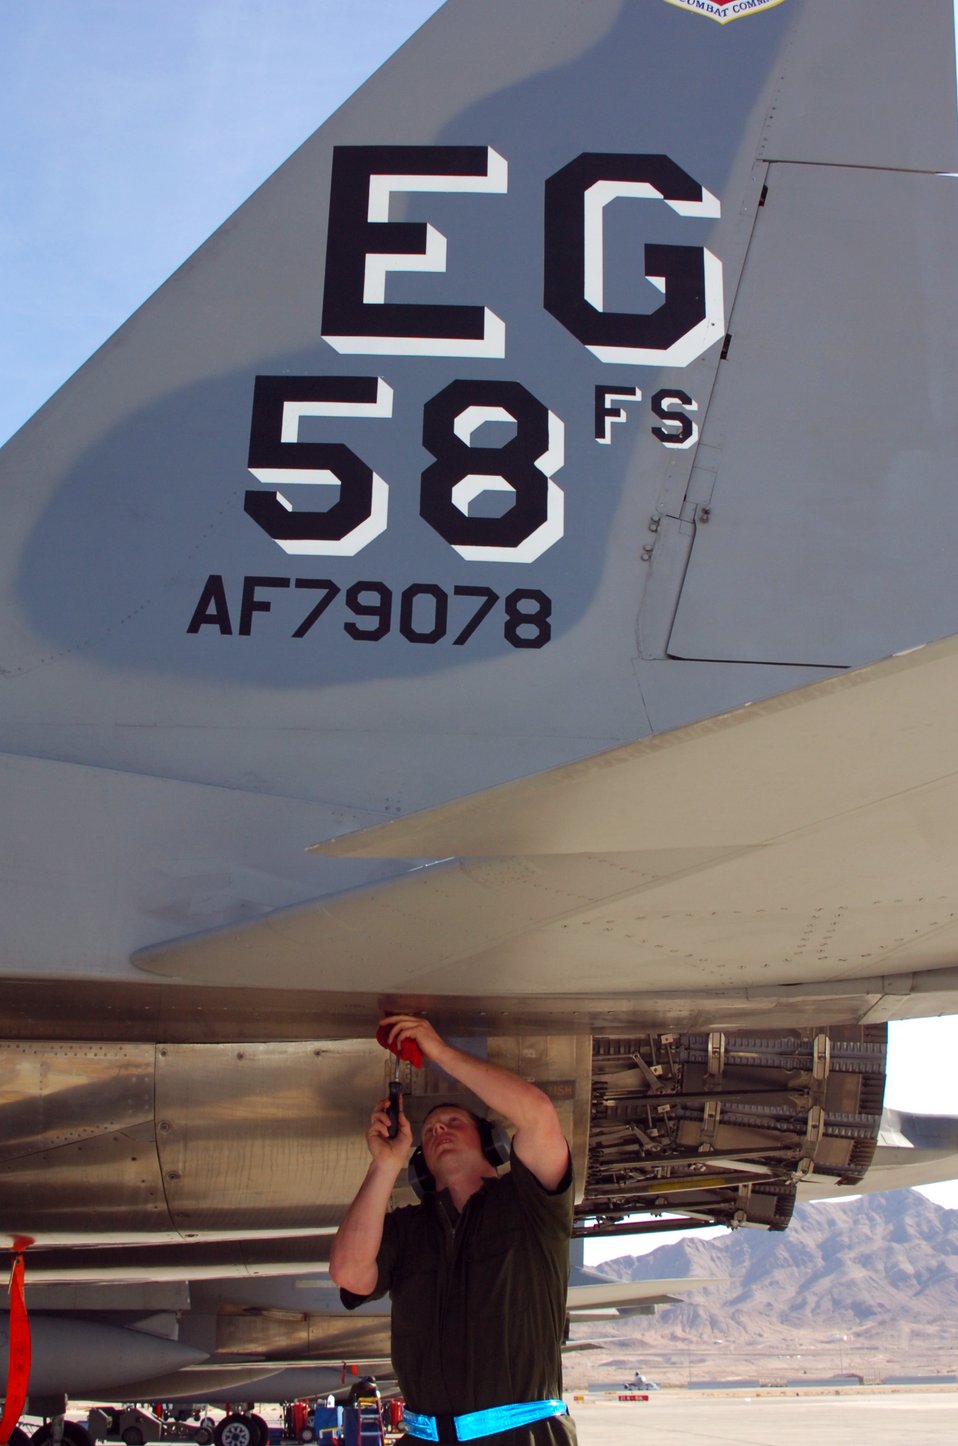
Red Flag joins American, allied airpower

NELLIS AIR FORCE BASE, Nev. (AFPN) -- Senior Airman Jeff Musselman tightens screws on an F-15 Eagle Feb. 6 during Red Flag 06-1 here. More than 130 aircraft and 2,500 personnel are supporting the simulated air war over the Nellis Test and Training Range. Airman Musselman is a crew chief with the 58th Aircraft Maintenance Unit at Eglin Air Force Base, Fla.